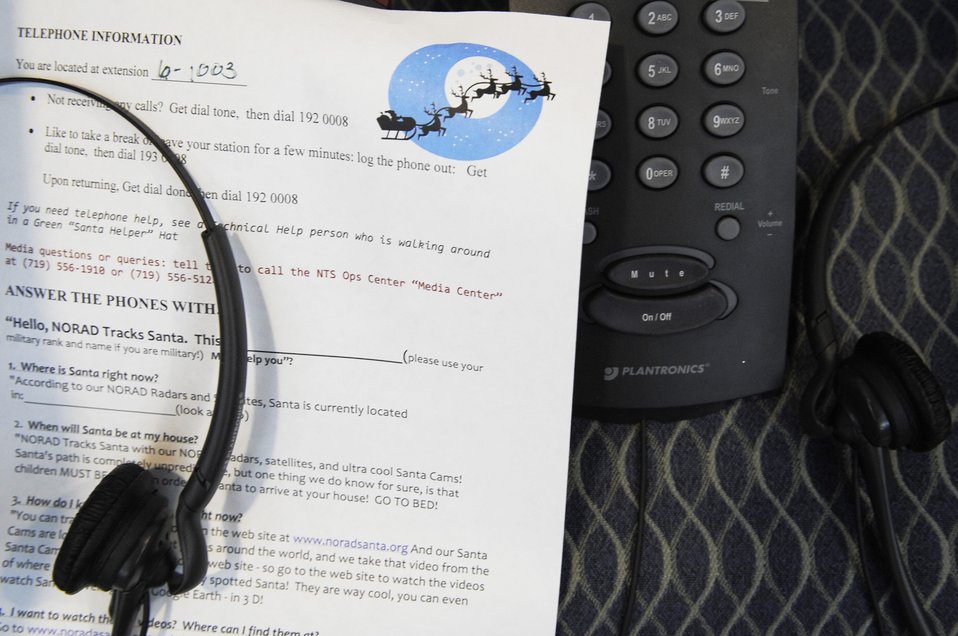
Santa Claus is coming to town

Caller instructions are taped to phones at the North American Aerospace Defense Command Tracks Santa Operations Center Dec. 22 at Peterson Air Force Base, Colo.